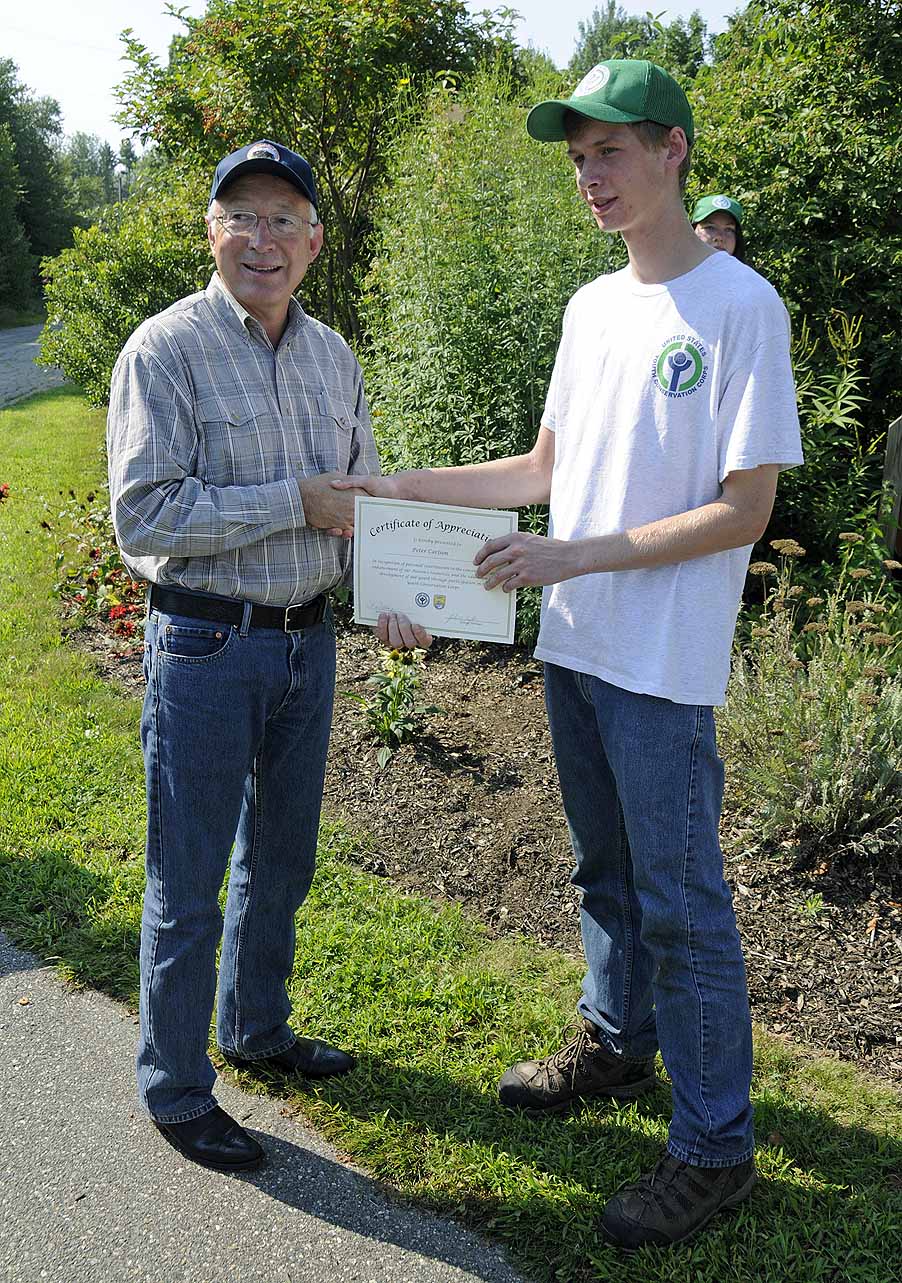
Secretary Salazar with Youth Conservation Corps member. Visit occurred on August 19, 2011.